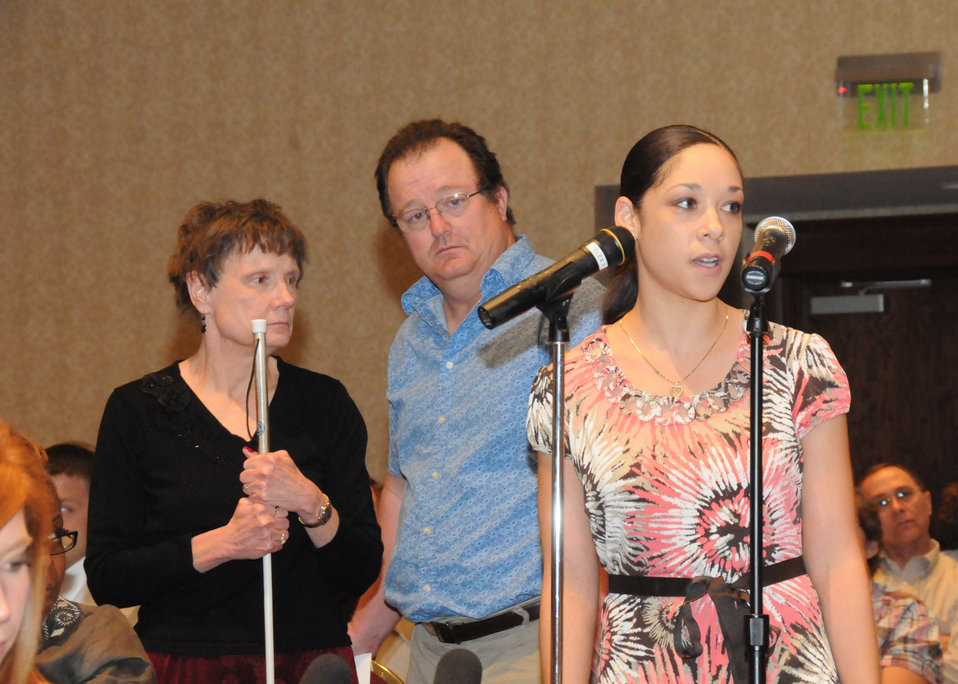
The U. S. Department of Agriculture (USDA) held the third of six Cultural Transformation Employee listening sessions in Kansas City, MO, on Wednesday, April 14, 2010. USDA employees expressed their concerns with issues at the Department and made suggestions for correcting them and improving the image of USDA. USDA photo 10di1309-186.